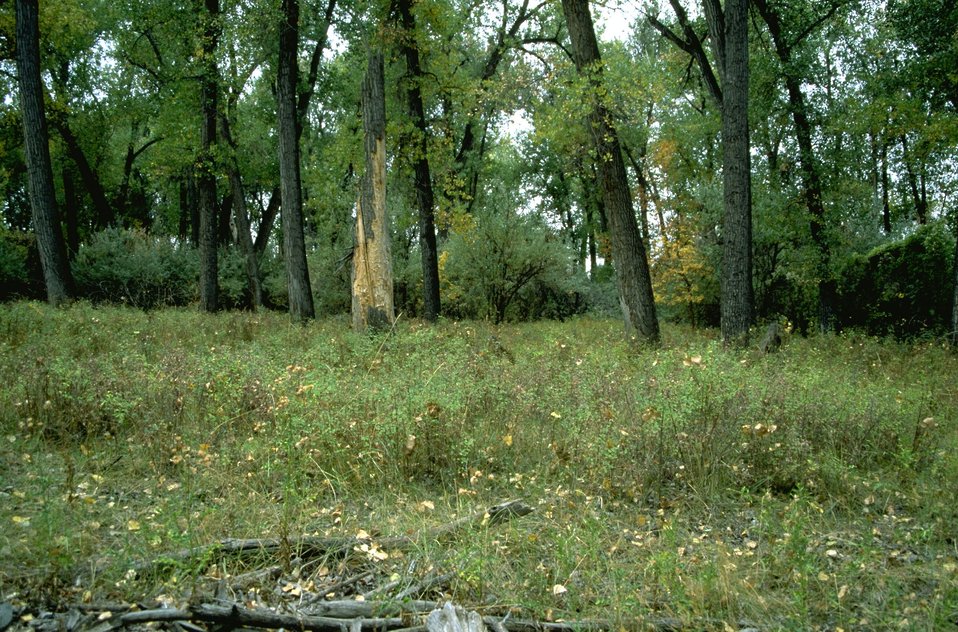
Cottonwood trees and bushes at Howrey Island Recreation Area